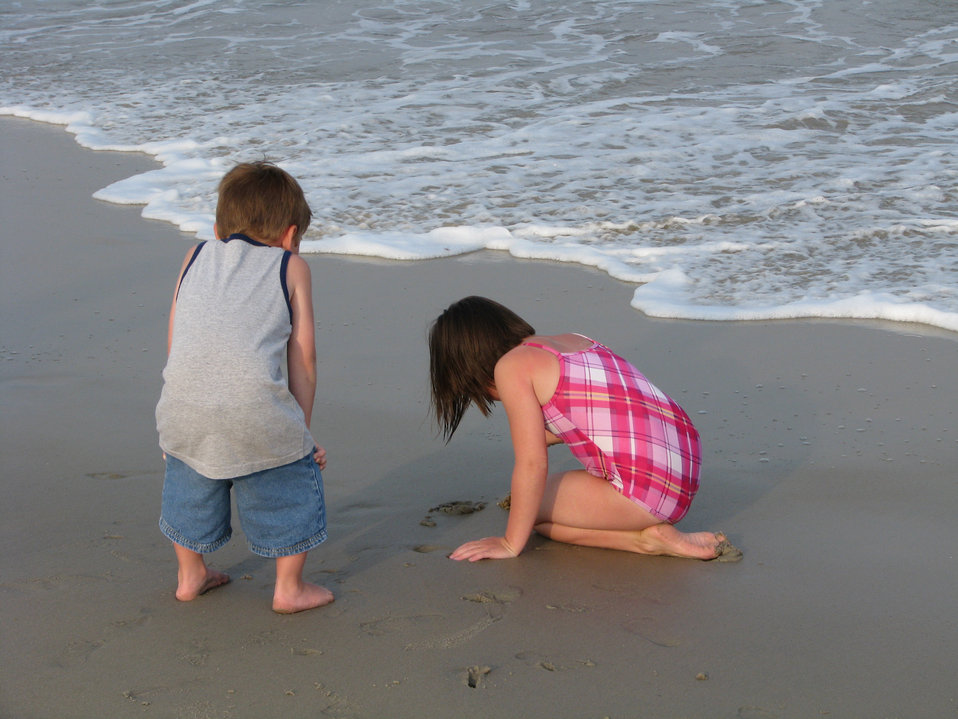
A boy and girl on the beach

A brother and sister enjoy treasures left by the receding waves at Chincoteague National Wildlife Refuge.